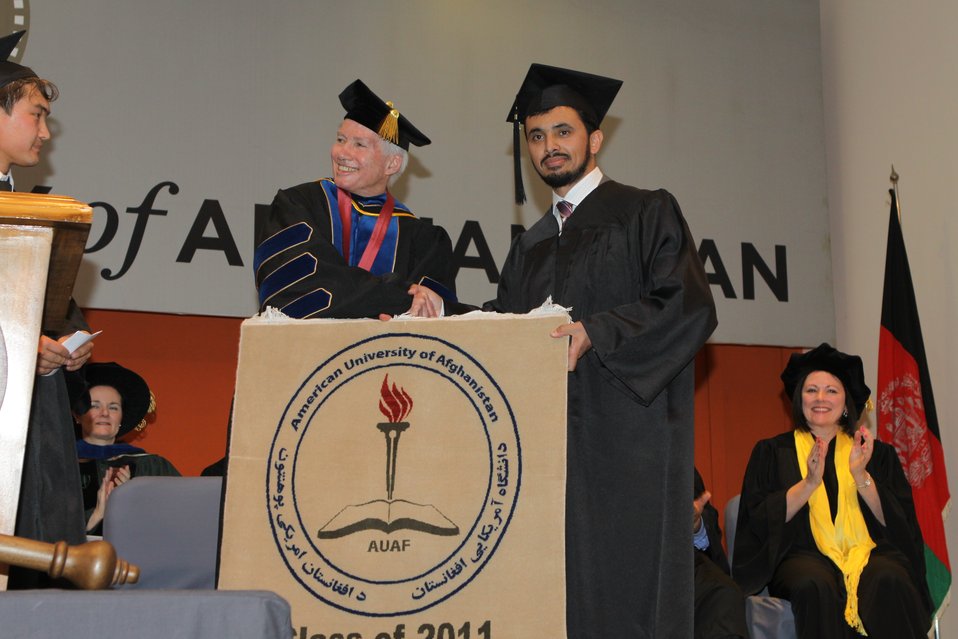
100526 AUAF Graduation 315